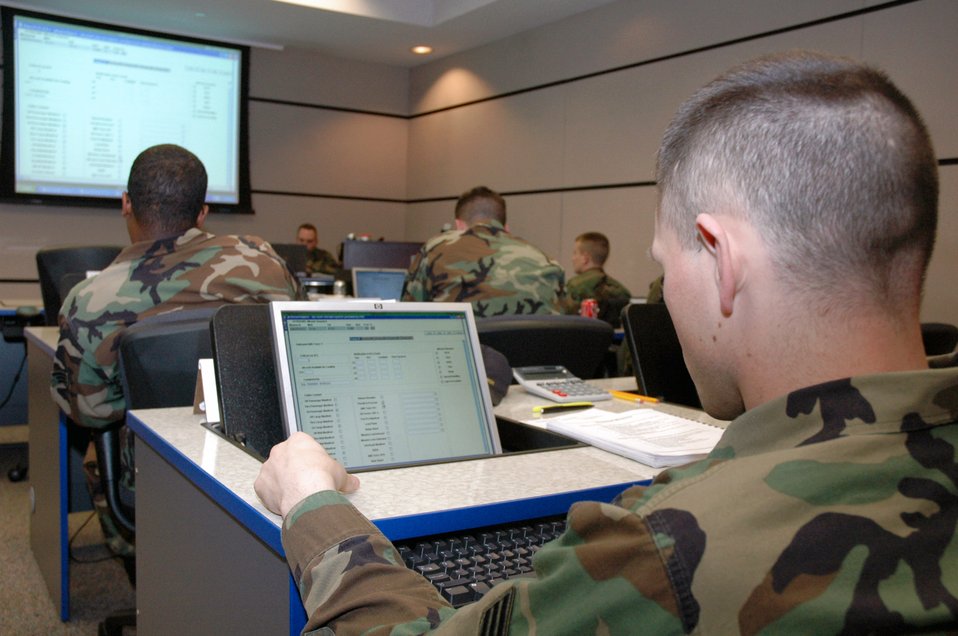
Aerial Port Airmen go to school

Students in the U.S. Air Force Expeditionary Center's Aerial Port Operations Course work on their computers in the classroom Feb. 20 inside the center on Fort Dix, N.J. The course, taught by instructors in the center's Mobility Operations School Air Transportation Branch, teaches Airmen in the Air Force air transportation career field subject areas such as air freight, passenger service, air terminal operations and higher headquarters functions.